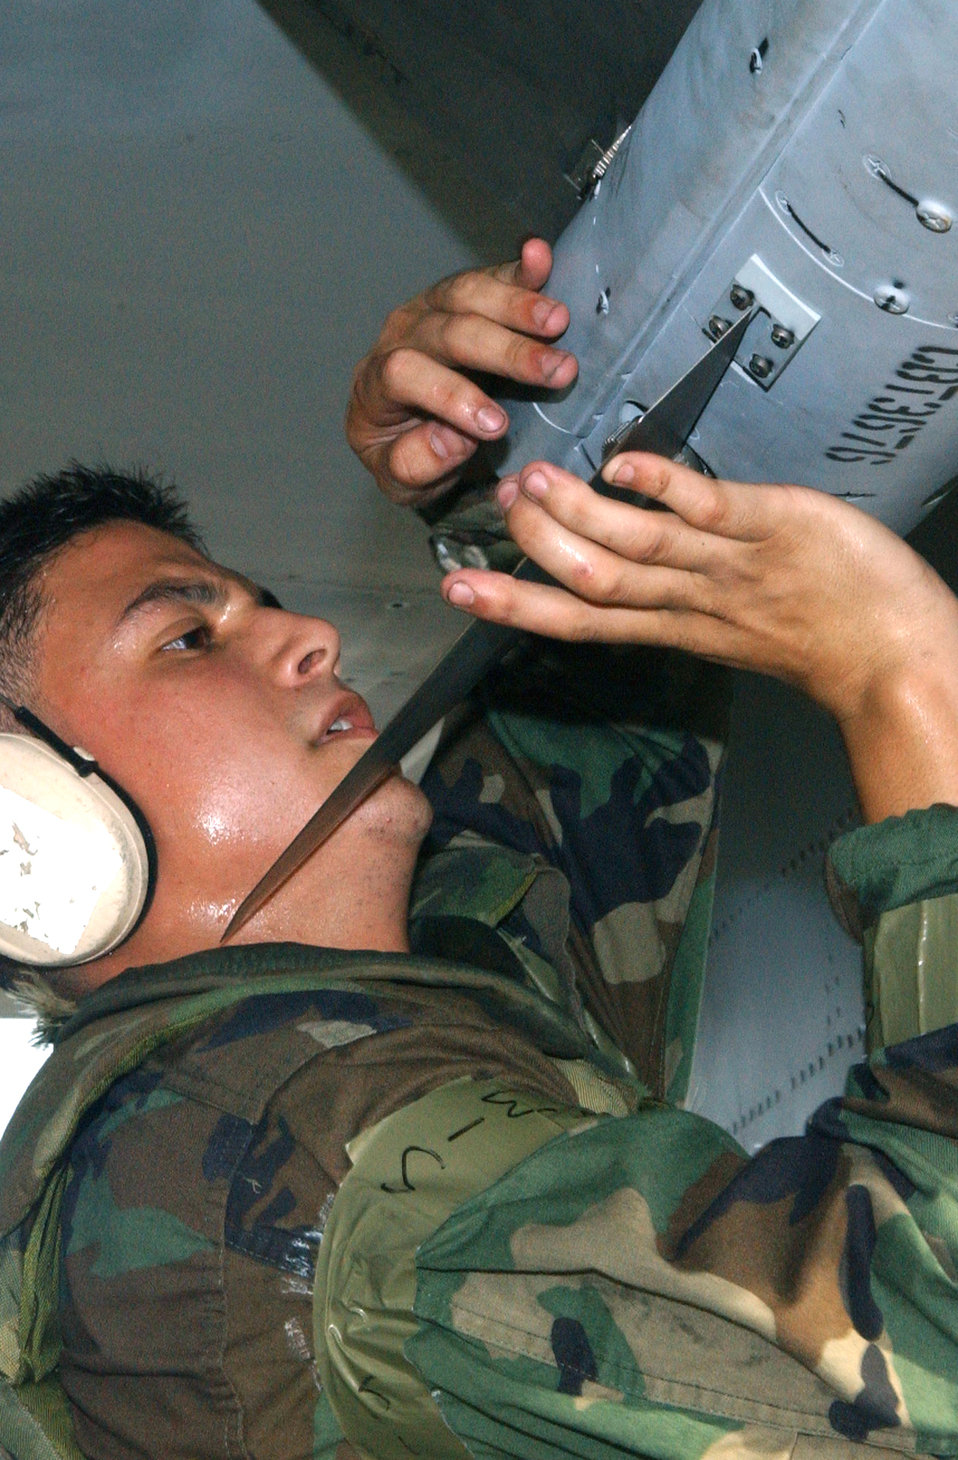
Guiding missiles

KADENA AIR BASE, Japan -- Airman 1st Class Logan Ayala attaches fins to a missile after loading it onto an F-15 Eagle during an exercise here. Airman Ayala is assigned to the 18th Aircraft Maintenance Squadron.